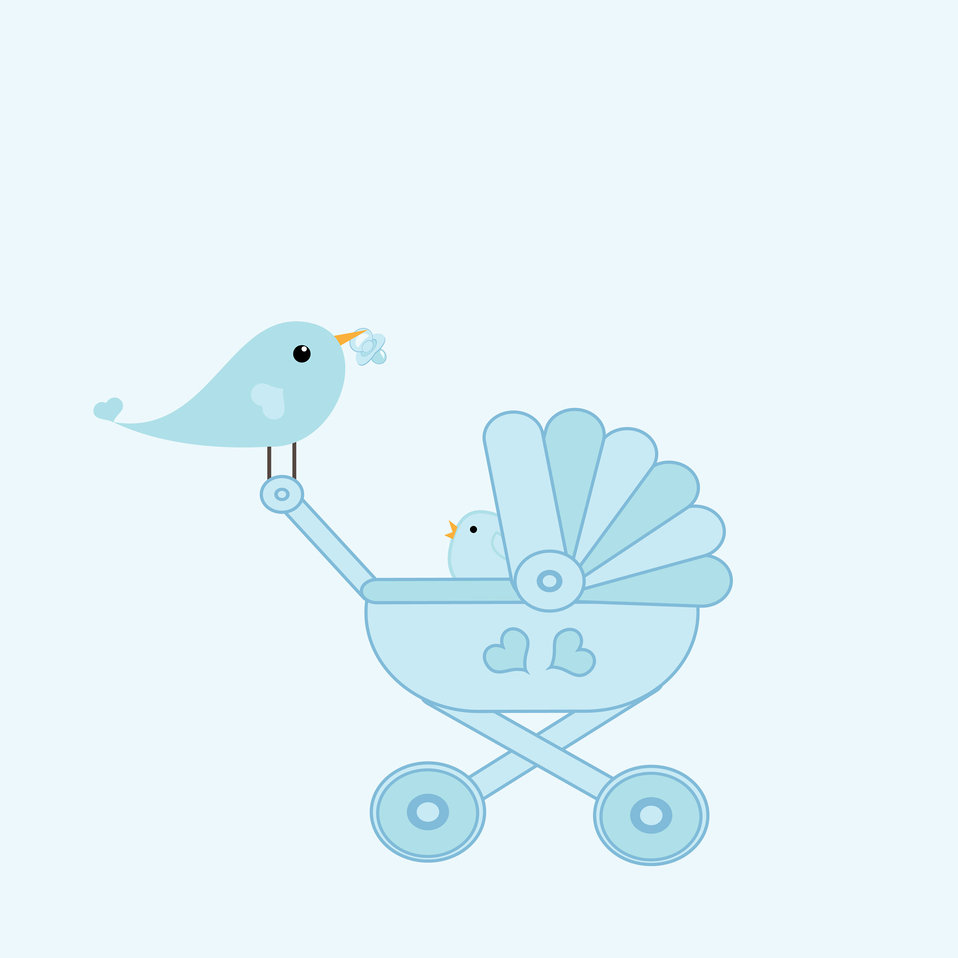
Baby boy background

Cute birds in baby blue for baby boy card template.